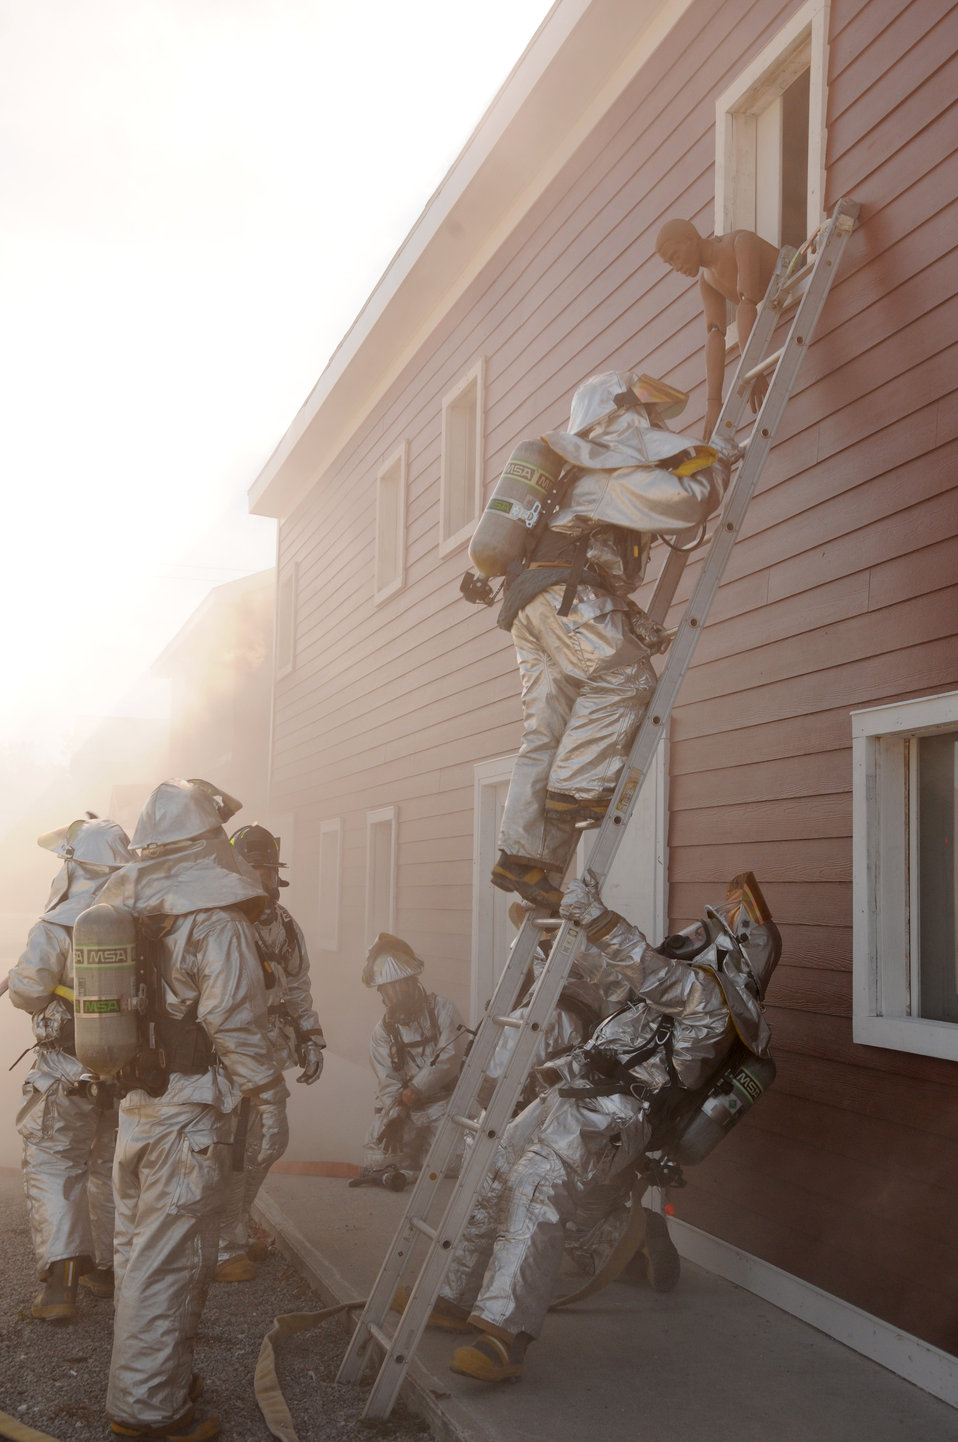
Firefighters sharpen their skills

Firefighters from the Ohio Air National Guard's 180th Fighter Wing rescue